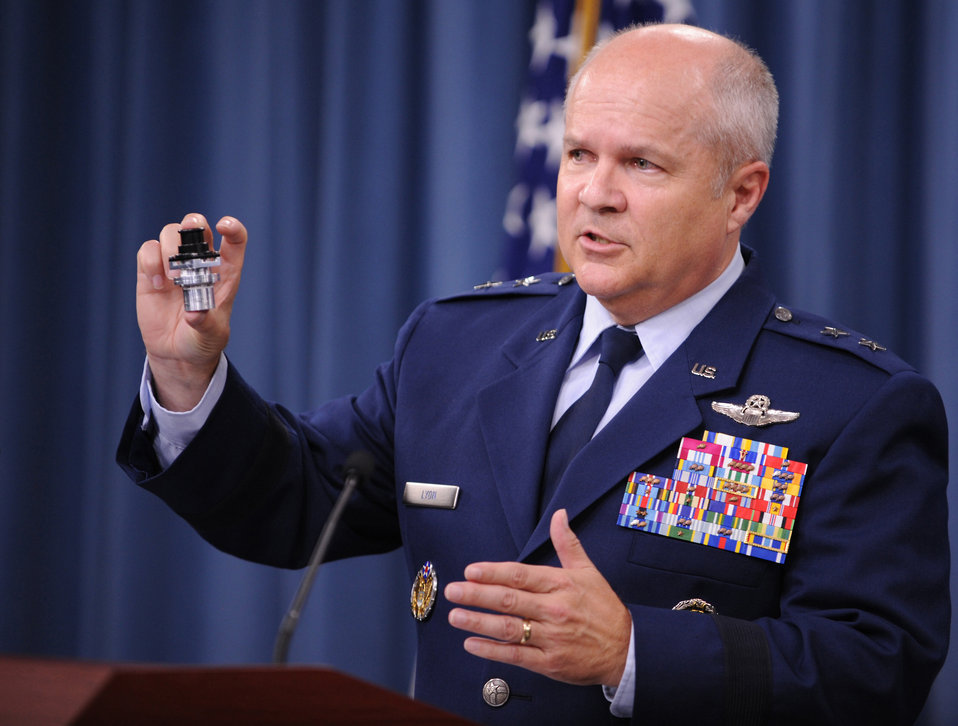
Air Force assures F-22 readiness following extensive testing

Maj. Gen. Charles Lyon speaks about a new valve that regulates the proper flow of oxygen to an F-22 Raptor pilot’s vest in Washington, D.C., July 31, 2012. The valve will begin testing next month and should be installed by the end of the year. Lyon is the director of operations at Headquarters Air Combat Command.